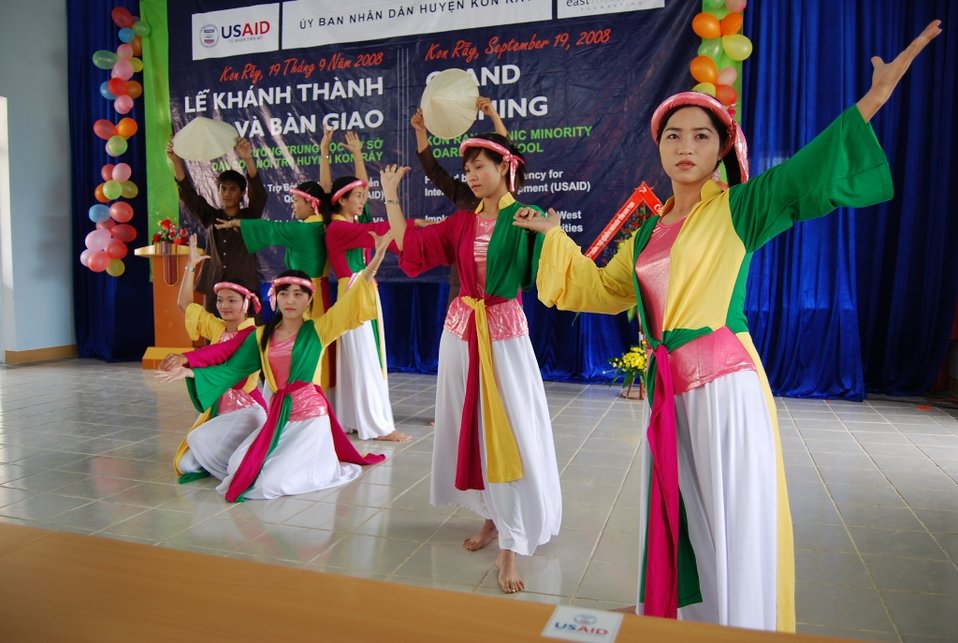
USAID supports education for ethnic minorities in rural Vietnam.

Dancing teachers mark the opening of the Kon Ray lower secondary school for ethnic minorities in central Kon Tum Province.